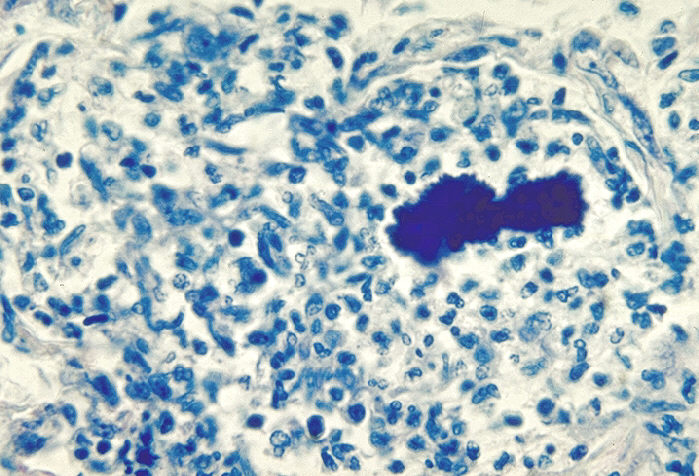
Histopathology of botryomycosis, lung. Giemsa stain.